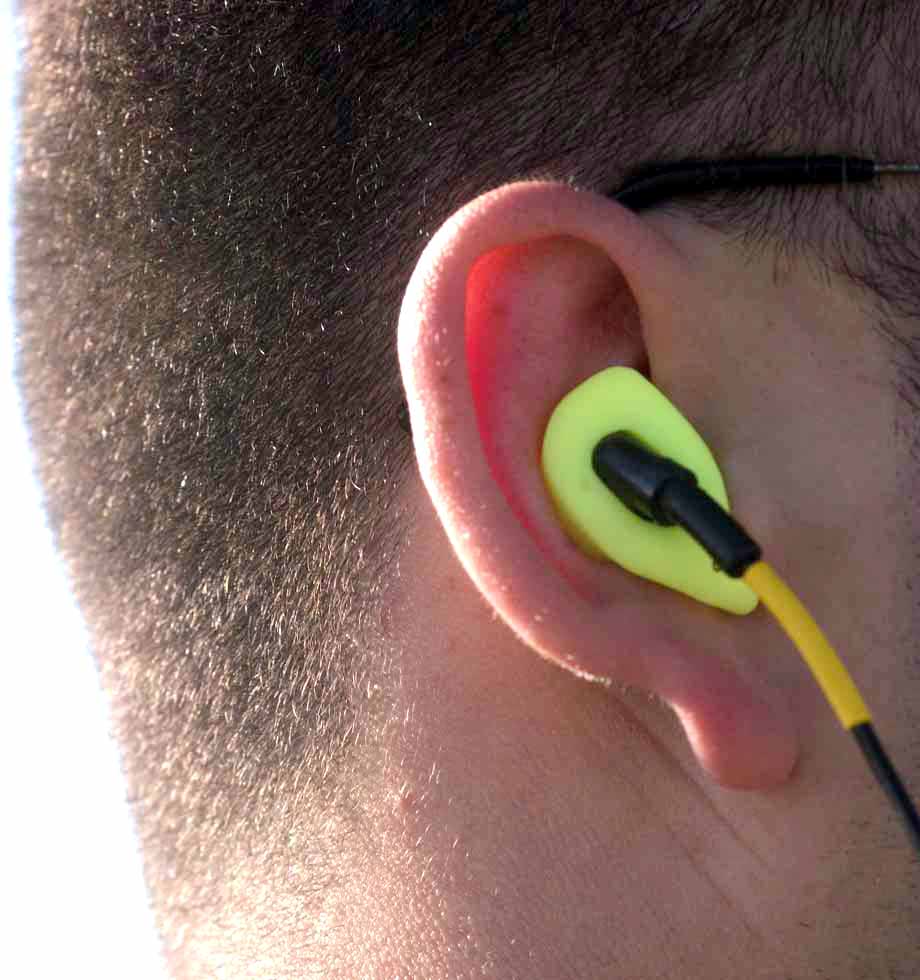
Airmen get ACCES to better communication

LANGLEY AIR FORCE BASE, Va. -- The attenuating customized communications earpiece system is made from silicone, which blocks out the higher frequencies while the form-fitted seal provides better protection from the noises on the lower end.